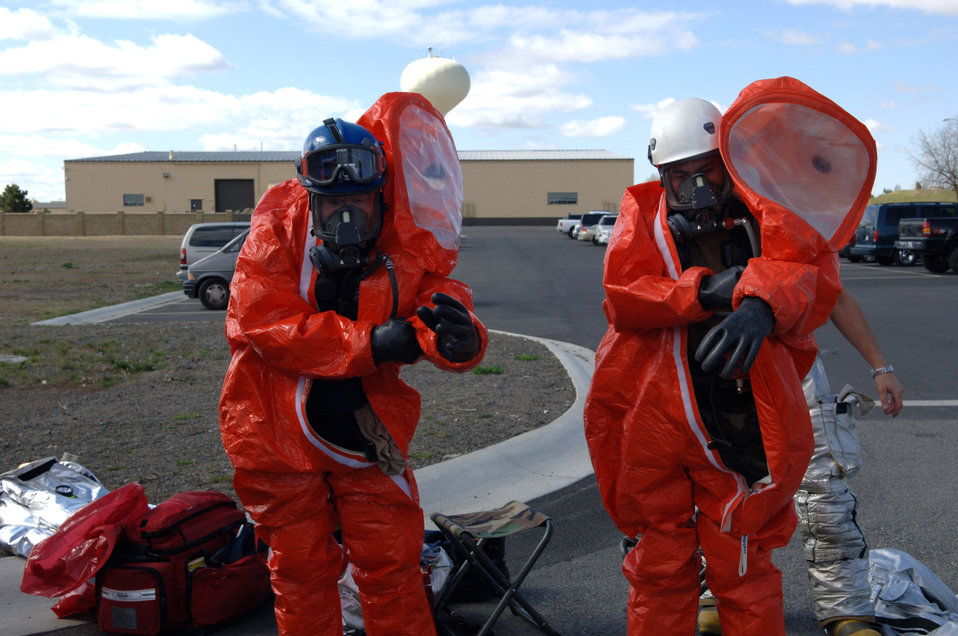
Fairchild puts readiness to the test

John Adams and Senior Airman David Adriatico don protective suits in preparation to enter a simulated hazardous area during an exercise April 19 at Fairchild Air Force Base, Wash. The exercise is intended to test the base's ability to respond to a weapon of mass destruction. Mr. Adams and Airman Adriatico are members of the 92nd Civil Engineer Squadron.